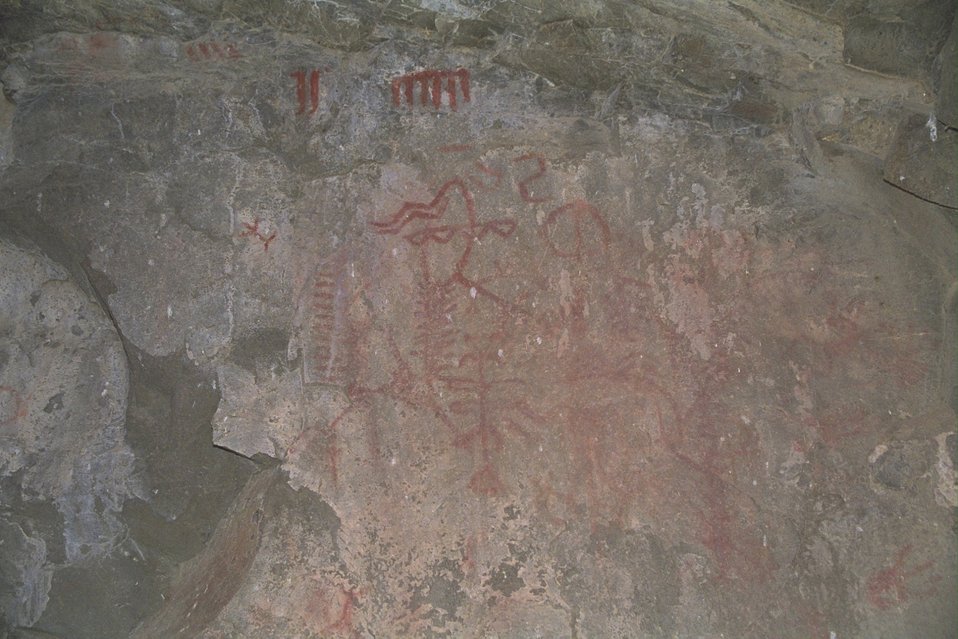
Rock paintings near the takeout at the end of section 2 in the John Day River.